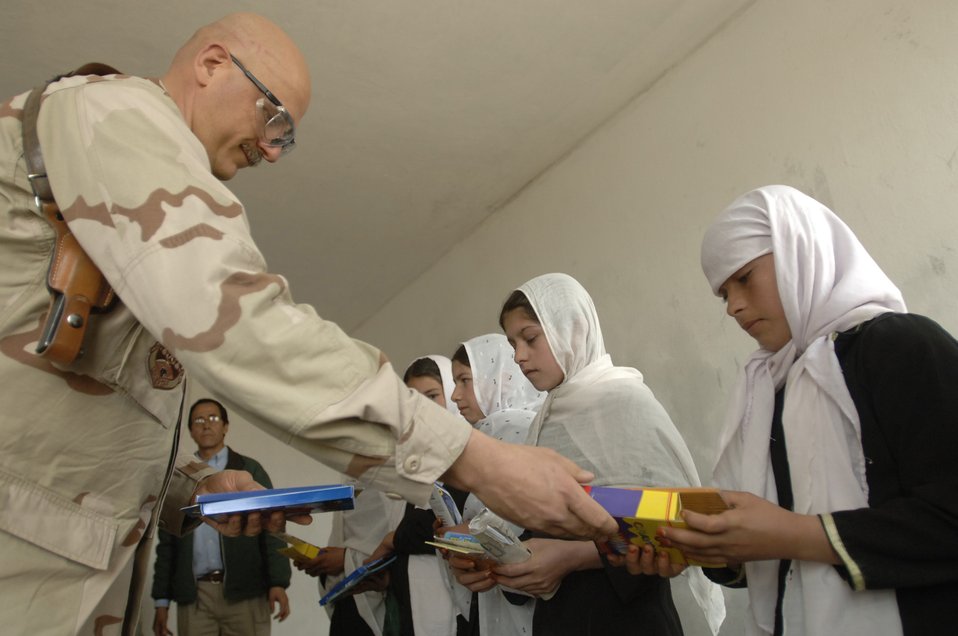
Bagram PRT rebuilds Afghanistan one school at a time

A local Afghan student receives donated school supplies from Lt. Col. Donald Koehler at the Mahmud Raqi High School in the town of Deh Baba Ali, Afghanistan, March 26. Bagram Provincial Reconstruction Team members aided in building the high school and donated approximately 3,000 pine and fruit trees along with several bundles of school supplies. Colonel Koehler is the Bagram PRT commander.